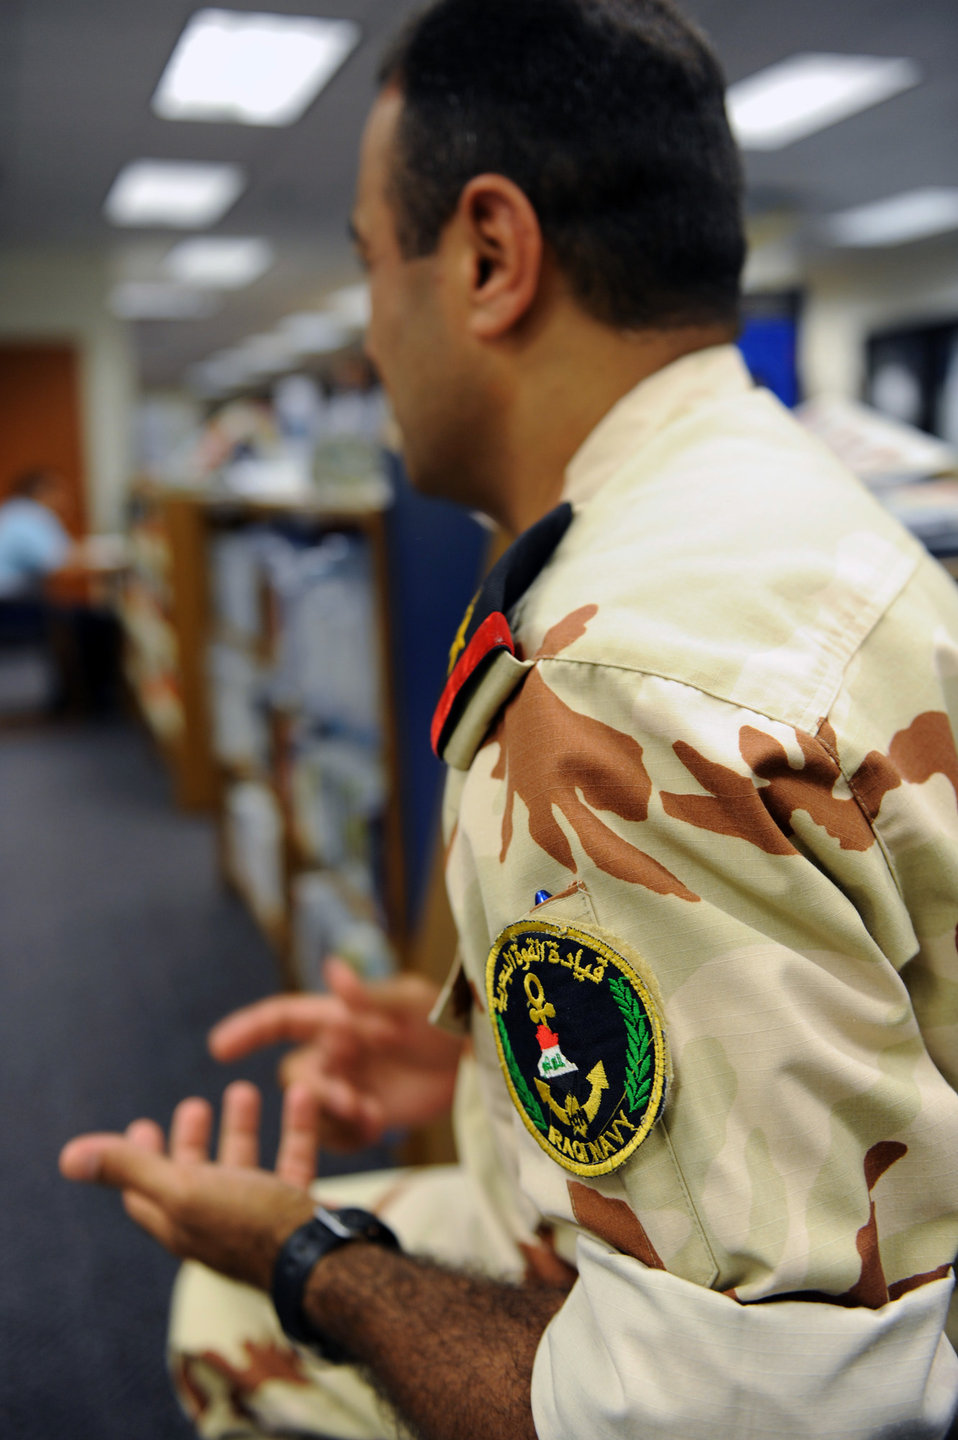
Language Institute's mission reaches for the future

Iraqi navy Captain Mahmammed discusses how important it is to learn the English language recently at the Defense Language Institute at Lackland Air Force Base, Texas. The captain is on his way to the Naval War College in Rhode Island.